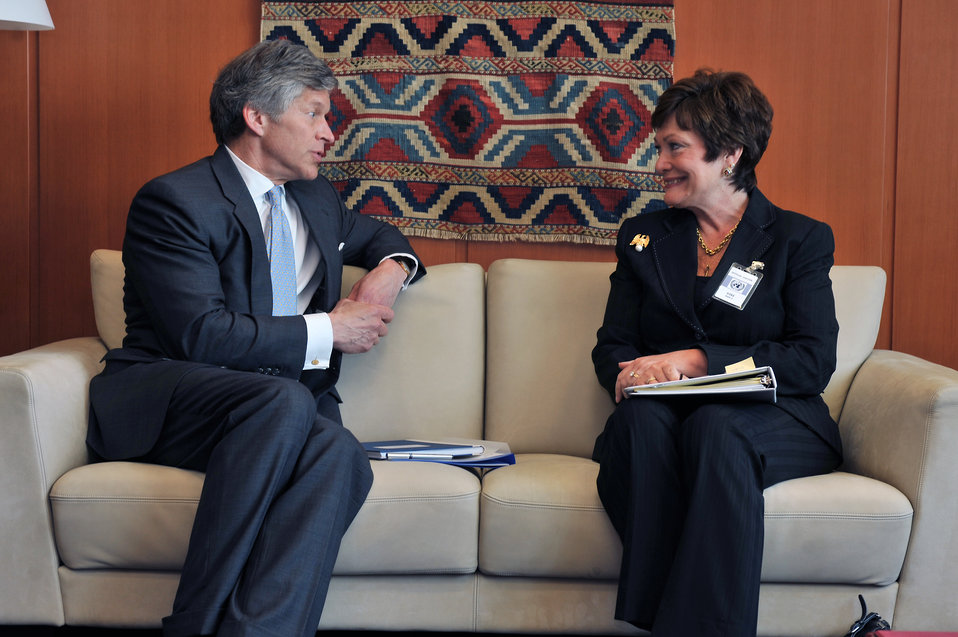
Under Secretary Tauscher Meets With IAEA Deputy Director Waller

David Waller, IAEA Deputy Director General Department of Management, welcomes Ellen Tauscher, Under Secretary of State for Arms Control and International Security Affairs, upon her arrival at the IAEA’s headquarters in Vienna, Austria, on June 15, 2011.